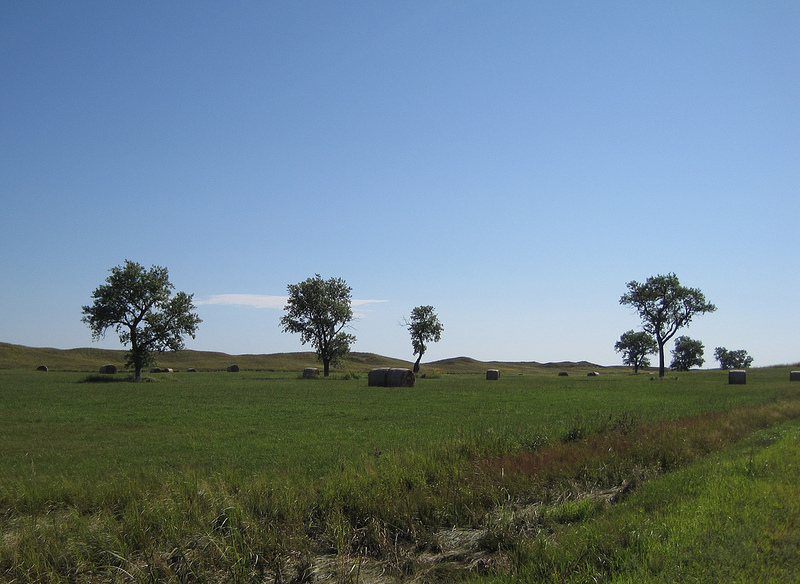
American Burying Beetle Country

A landscape shot of 'American Burying Beetle Country!'

Location: Price Ranch near Burwell, Nebraska

Credit: Lindsay Vivian / USFWS

Photo Contest Entry #49